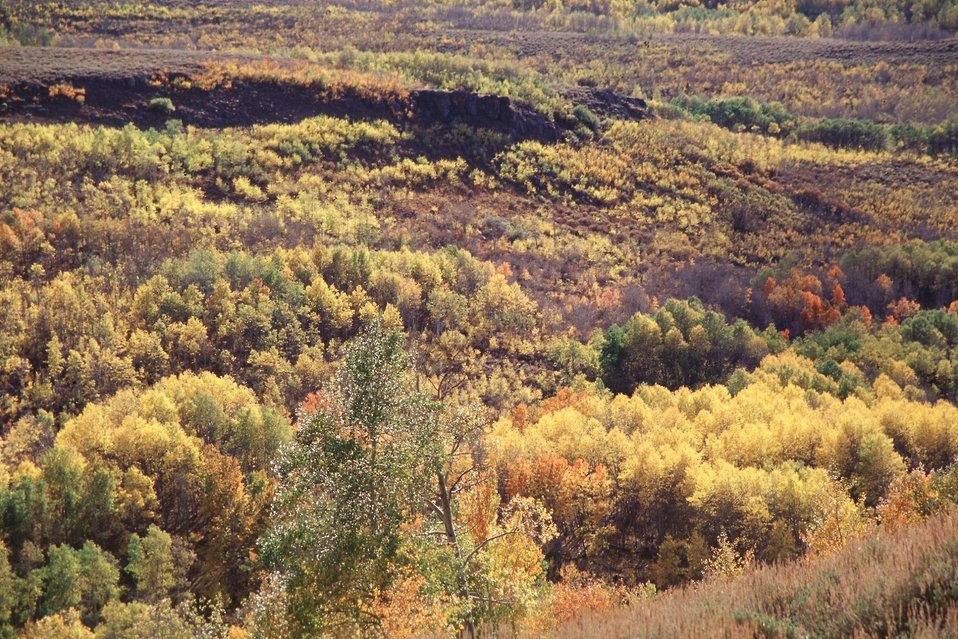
Aspens at sunset. Fish Creek, Steen's Mountain.